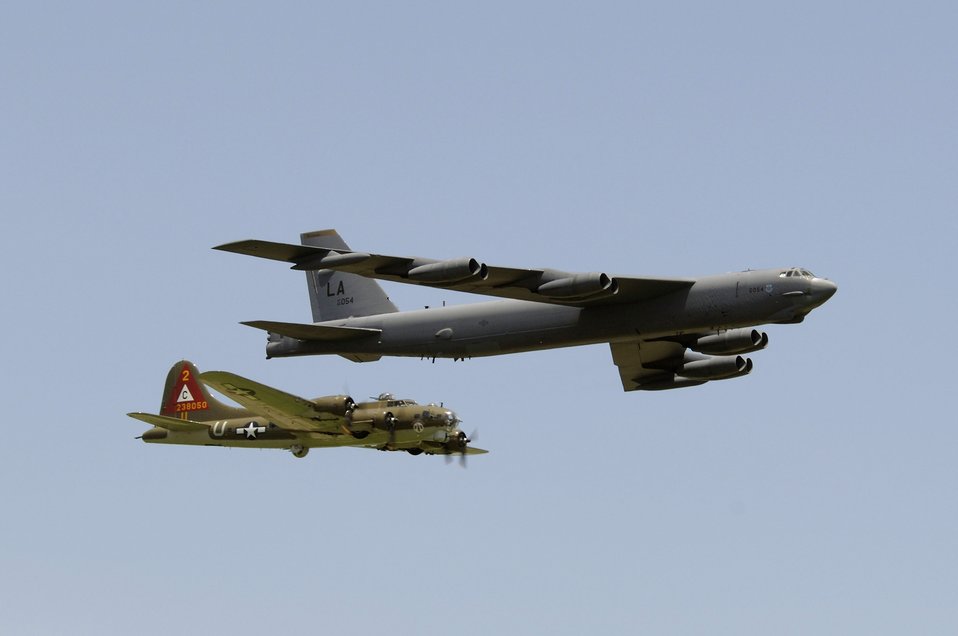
Heritage flight

A B-17G Flying Fortress and a B-52H Stratofortress fly in a heritage flight formation on Saturday, May 13 during the 2006 Defenders of Liberty Airshow at Barksdale Air Force Base, La. These two aircraft represent 70 years of